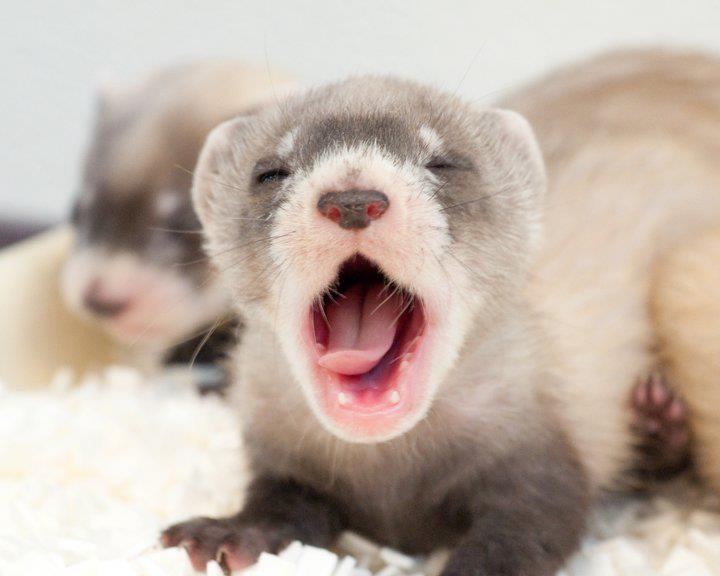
Sleepy Kit

A tired black-footed ferret kit yawns for USFWS photographer, Kimberly Tamkun at the National Black-footed Ferret Conservation Center.

Credit: Kimberly Tamkun / USFWS

Photo Contest Entry #188